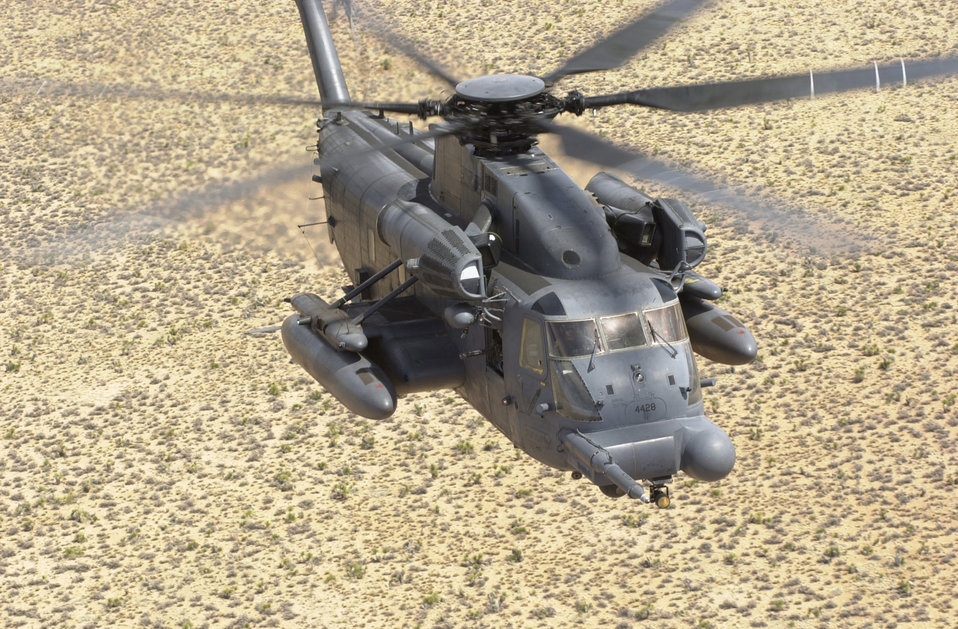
MH-53J

KIRTLAND AIR FORCE BASE, N.M. -- A 58th Special Operations Wing, 551st Special Operations Squadron, MH-53J Pave Low IIIE flies a training mission near Kirtland Air Force Base, NM. The MH-53J's mission is to perform low-level, long-range, undetected penetration into denied areas, day or night, in adverse weather, for infiltration, exfiltration and resupply of special operations forces. The MH-53J Pave Low III heavy-lift helicopter is the largest and most powerful helicopter in the Air Force inventory, and the most technologically advanced helicopter in the world. Its terrain-following, terrain-avoidance radar and forward-looking infrared sensor, along with a projected map display, enable the crew to follow terrain contours and avoid obstacles, making low-level penetration possible.